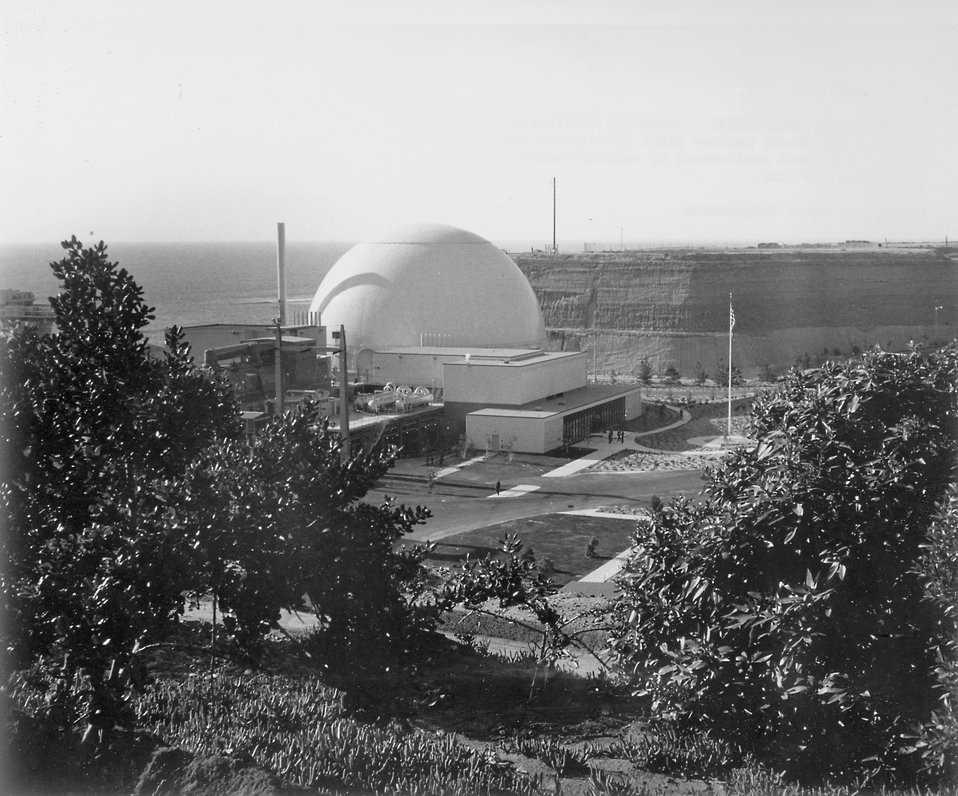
Southern California Edison's San Onofre nuclear plant illustrates the clean operational environment of nuclear-fueled generating stations. Circa 1970.